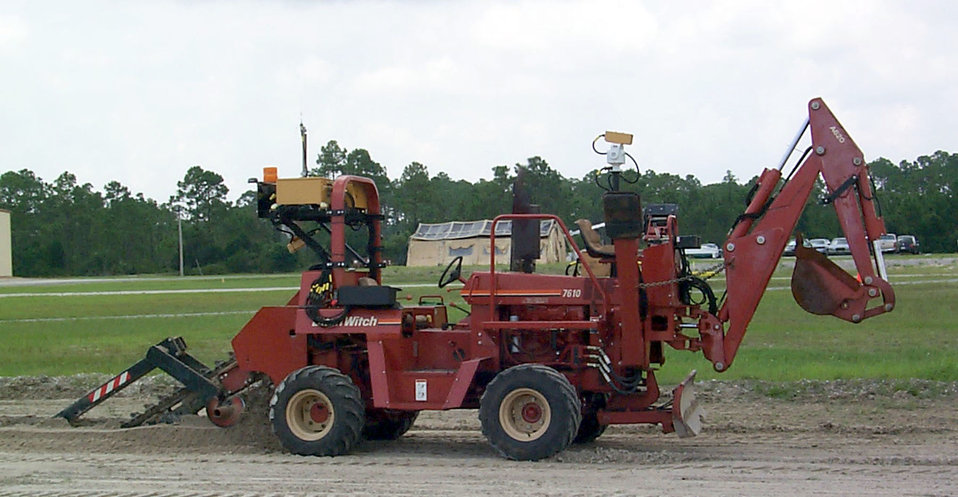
Engineers develop improved robotic tractor

WRIGHT-PATTERSON AIR FORCE BASE, Ohio -- Engineers from Air Force Research Laboratory's materials and manufacturing directorate designed an advanced robotic trenching tractor, called Robo Trencher, so combat engineers can perform cable trenching and excavation missions in dangerous locations.